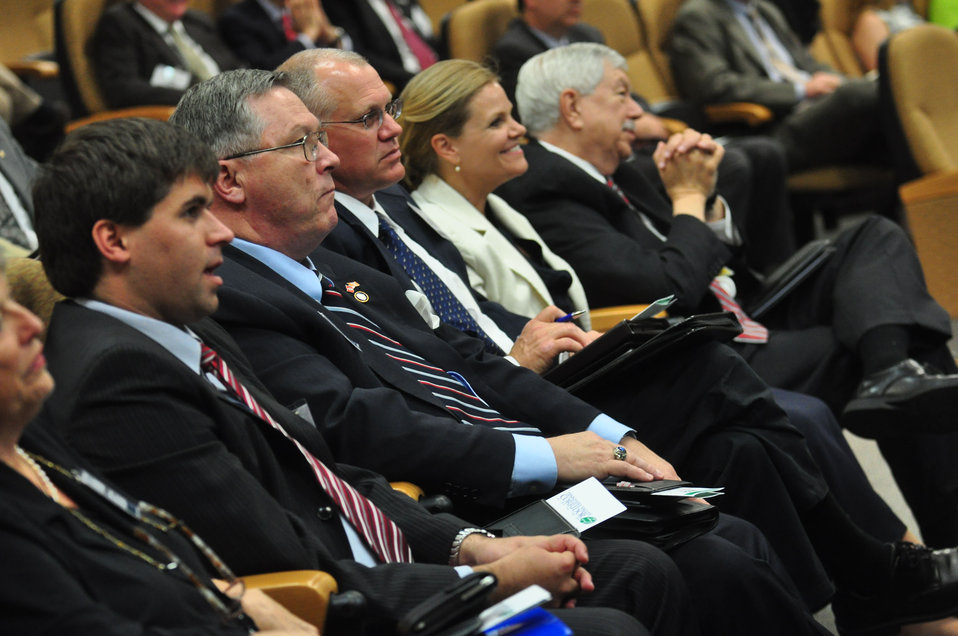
Tennessee Valley Corridor Summit Oak Ridge

13-062 DOE photo Lynn Freeny 5-29-2013 Oak Ridge Tennessee